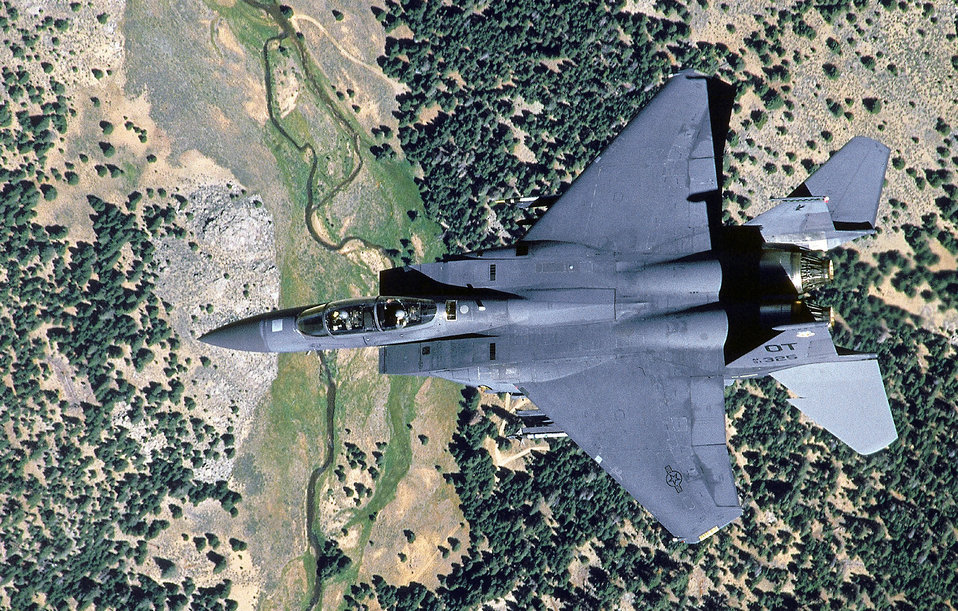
A view from the top

NELLIS AIR FORCE BASE -- An F-15E Strike Eagle heads out on a Red Flag mission here, Aug.14. Red Flag is the most realistic air-warfare training exercise in the world. It regularly involves the air forces of the United States and its allies.